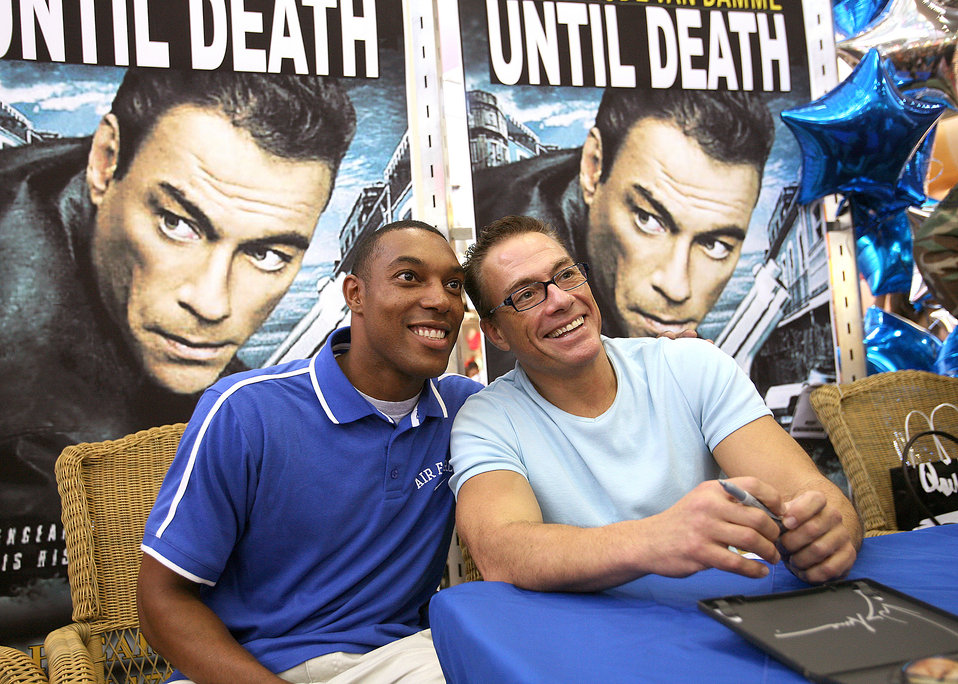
Strike a pose with Jean-Claude

Airman 1st Class Joseph Langston poses for a picture with actor Jean-Claude Van Damme June 2 at the base exchange at Lackland Air Force Base, Texas. Mr. Van Damme signed autographs and posed for photos with base members. Airman Langston is a services technical training student with the 344th Training Squadron.